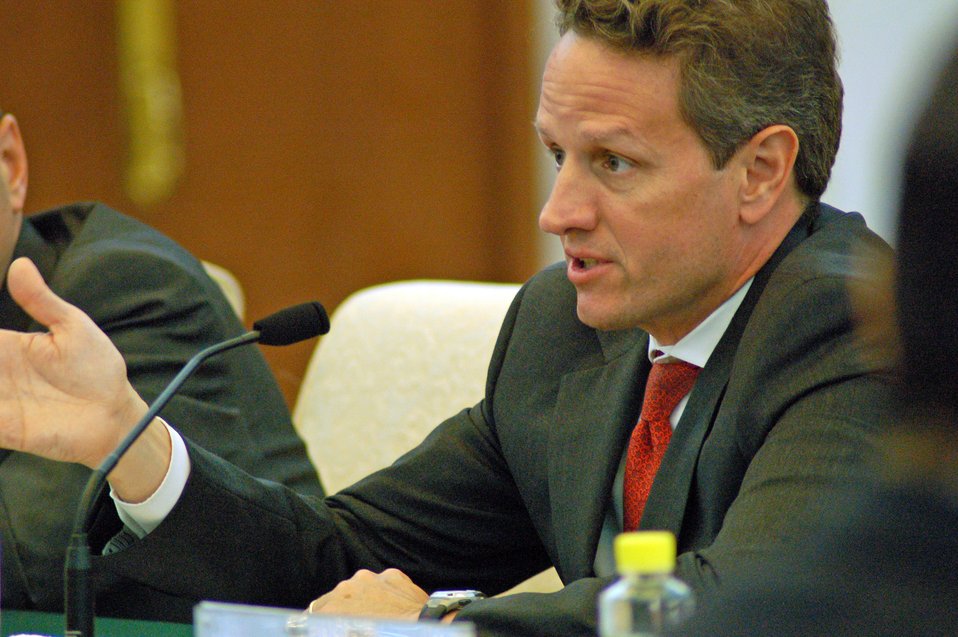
China trip: May 31-July 2 2009

Secretary Geithner during his meeting with Vice Premier Wang Qishan.